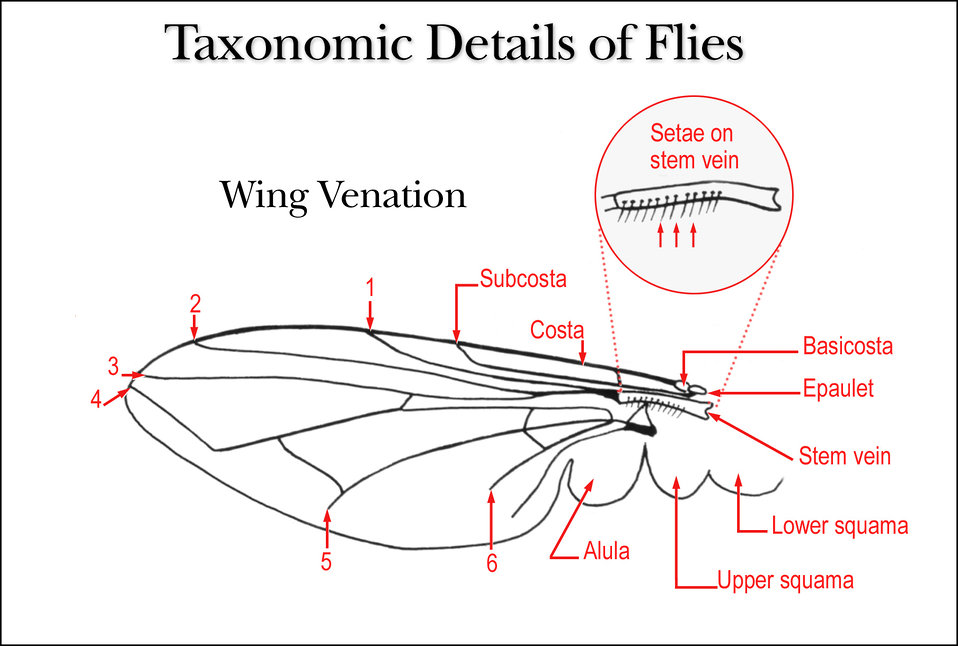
This illustration shows the details of a fly's wing venation, which are important when taxonomically classifying these insects.